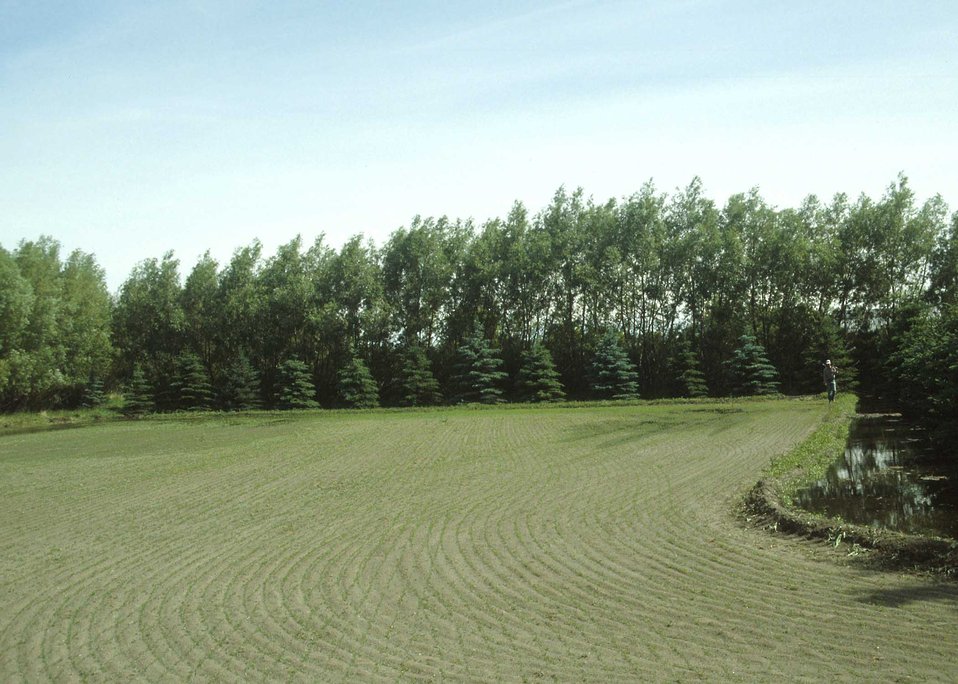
Windbreak to reduce soil erosion from wind.